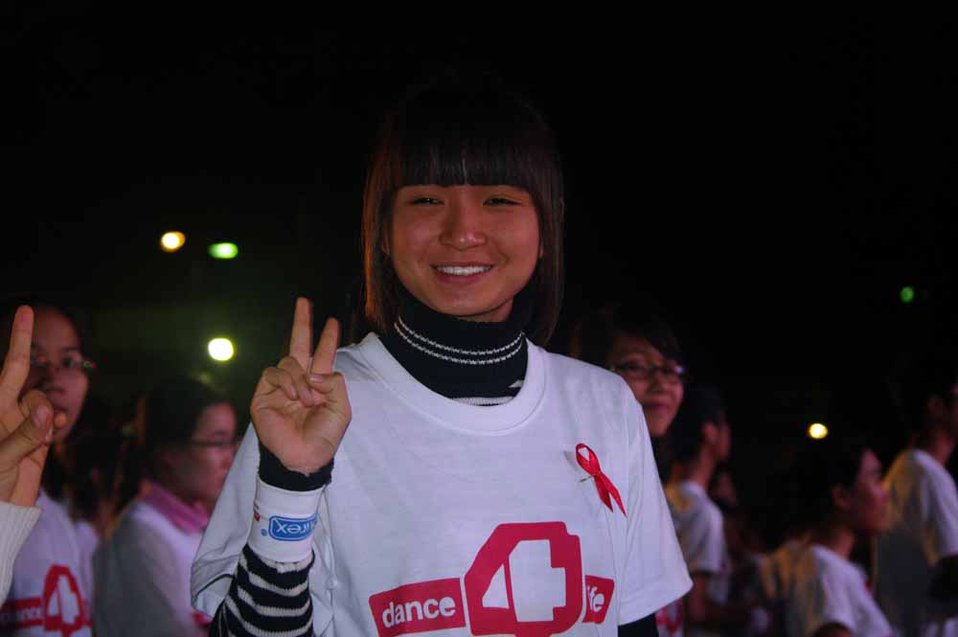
dance4life, Hanoi